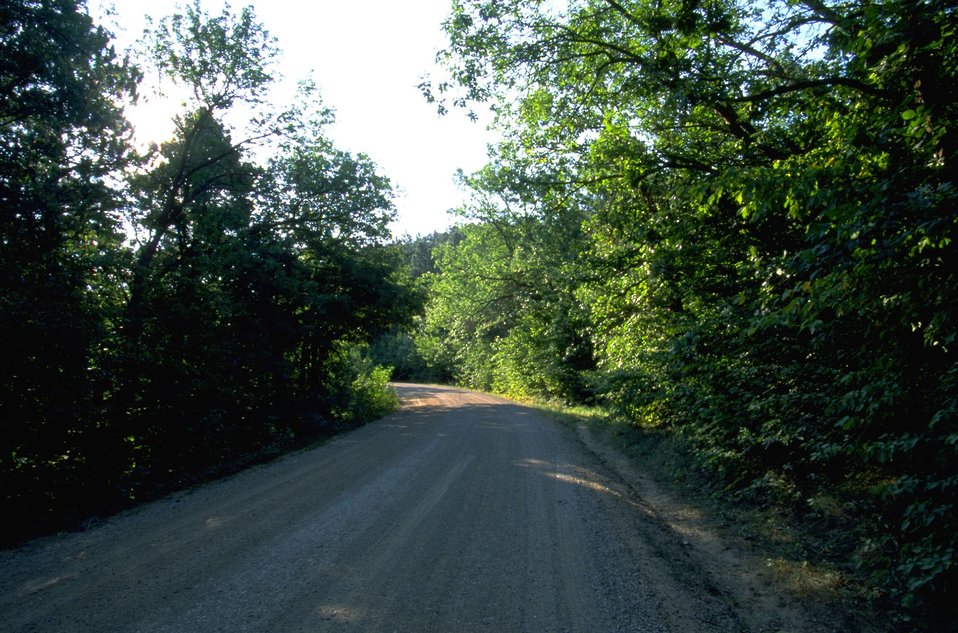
Back Country Byway at the south end of Fort Meade